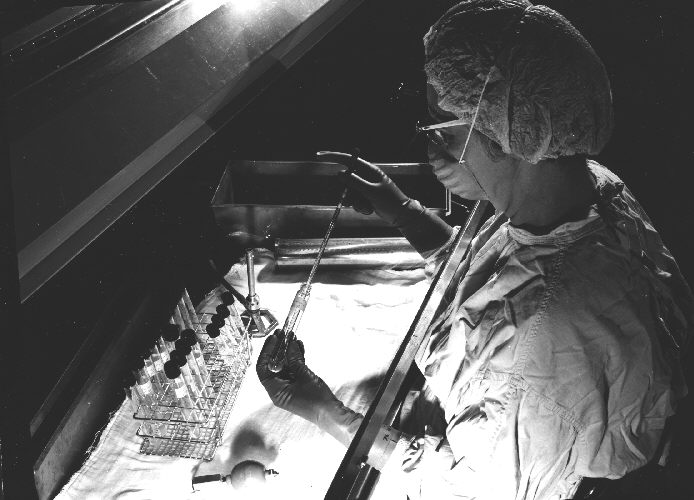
CDC Laboratorian